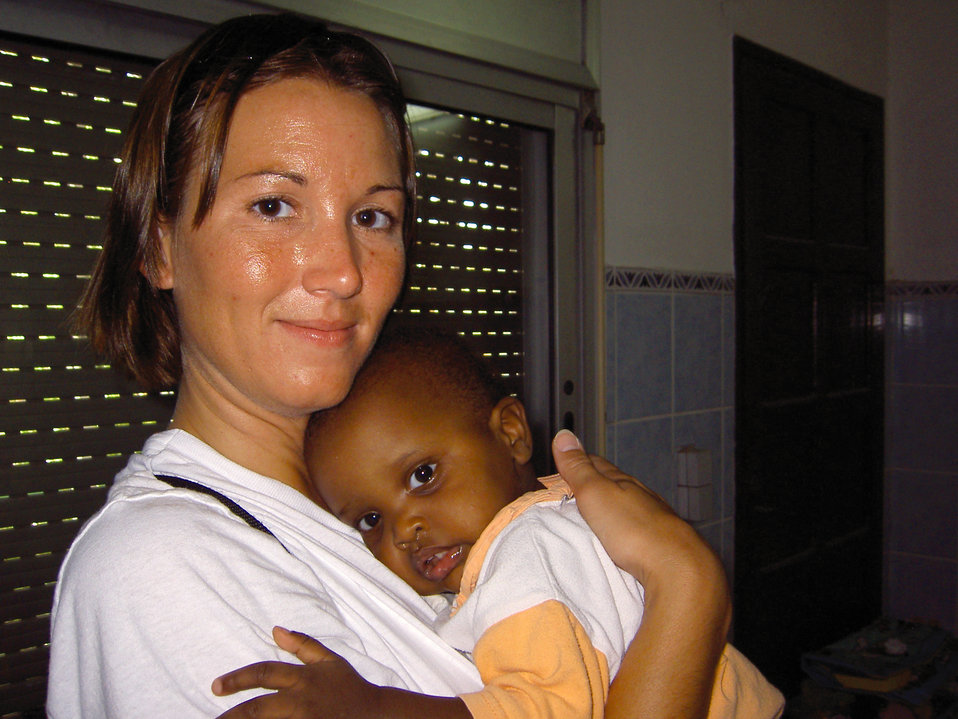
Medevac crew devotes time to African orphanage

DJIBOUTI -- Capt. Karen Mensen shares a moment with one of 30 children at an orphanage. She and other Airmen on her medical evacuation crew volunteered at the orphanage while deployed here. Captain Mensen is a flight nurse deployed from the Minnesota Air National Guard's 109th Aeromedical Evacuation Squadron.